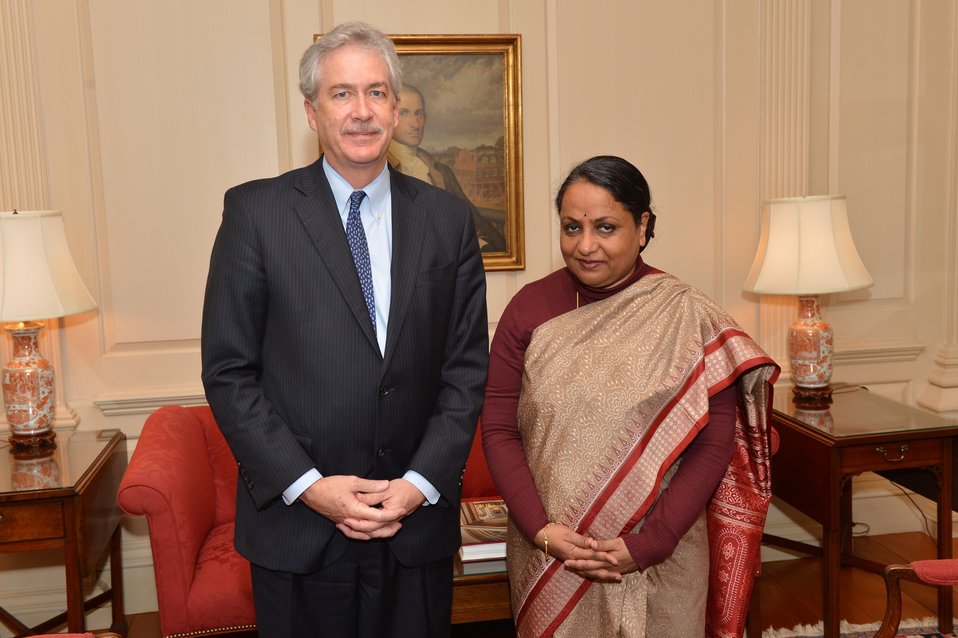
Deputy Secretary Burns Poses for a Photo With Indian Foreign Secretary Singh

Deputy Secretary of State Bill Burns poses for a photo with Indian Foreign Secretary Sujatha Singh before their meeting at the U.S. Department of State in Washington, D.C., on December 10, 2013.